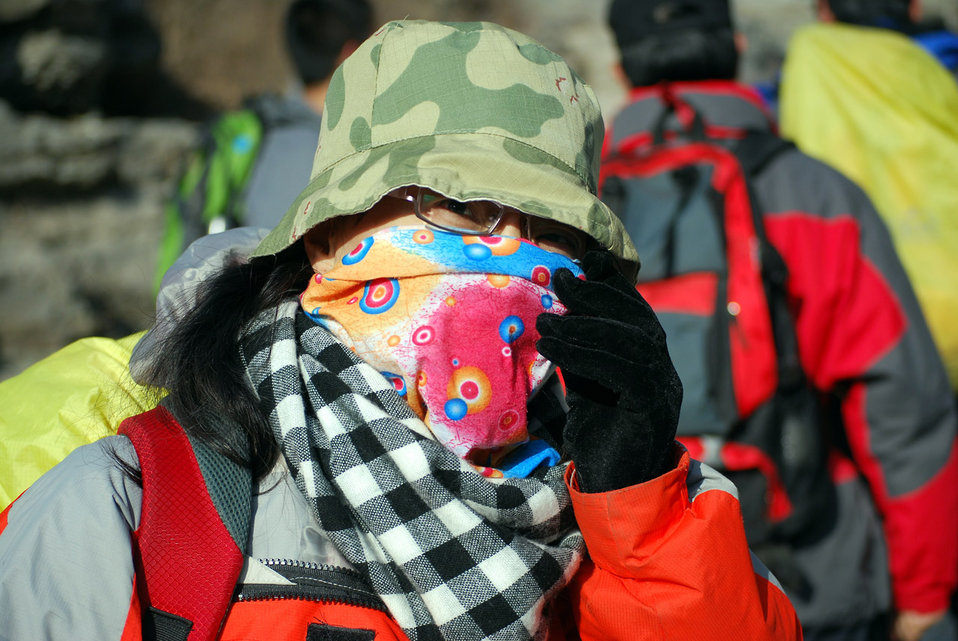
Mysterious woman

A young woman bundled up from the cold.